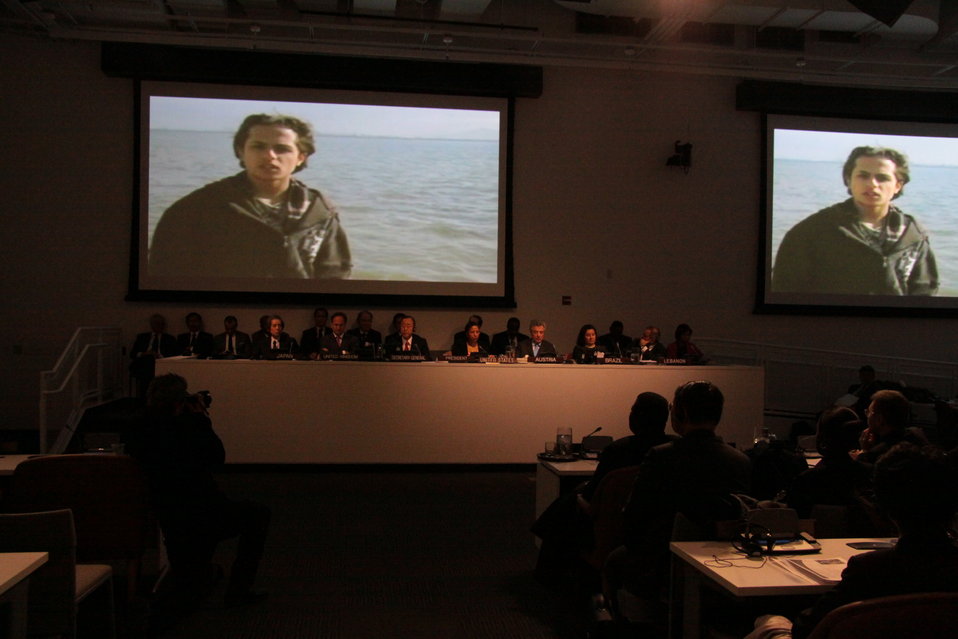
Voices of a New Generation: Young People Set the Agenda at the UN Security Council

Individuals watch a video of a young man expressing his opinion of what should be on the agenda of the UN Security Council during the special event, Voices of a New Generation, at the United Nations in New York, New York, on December 21, 2010.